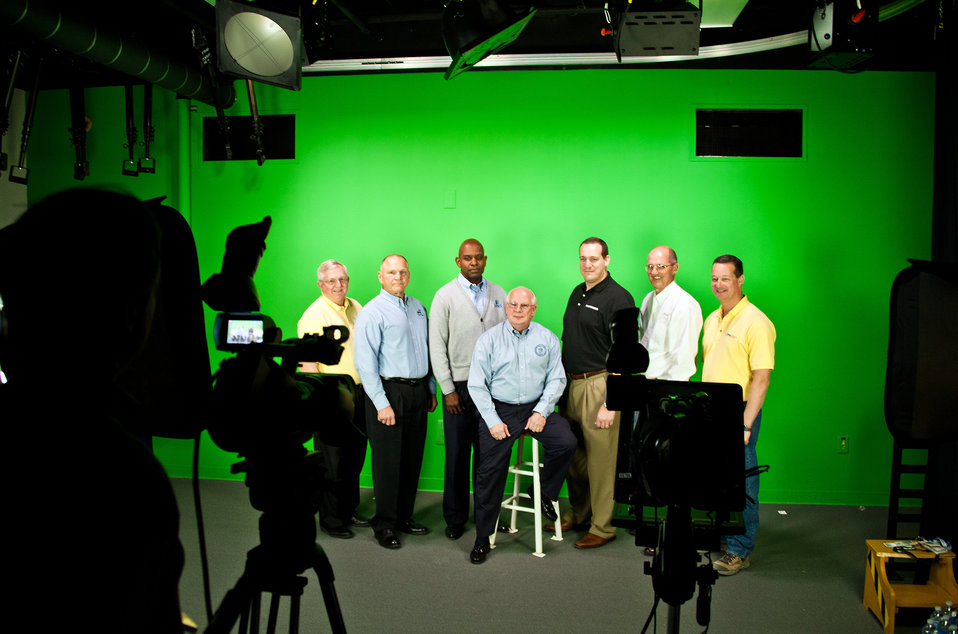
Safety at Savannah

Top executives from all of the major contractors at the Savannah River Site (SRS) and the DOE-Savannah River Operations Office Manager David Moody (seated) work together to create a video production promoting a new and dynamic safety program for SRS employees.